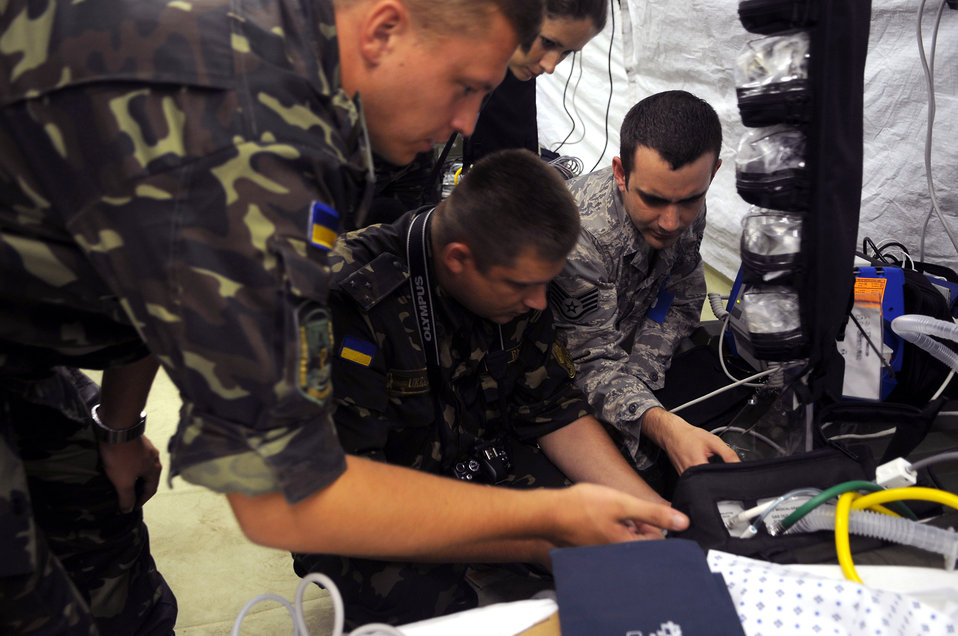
Airmen stand up medical squadron to support training exercise

Staff Sgt. Kelly Kramer describes the workings of medical equipment to multinational troops during an exercise orientation Sept. 8, 2009, in Nis, Serbia. Airmen Sergeant Kramer is assigned to the 458th Expeditionary Medical Squadron.